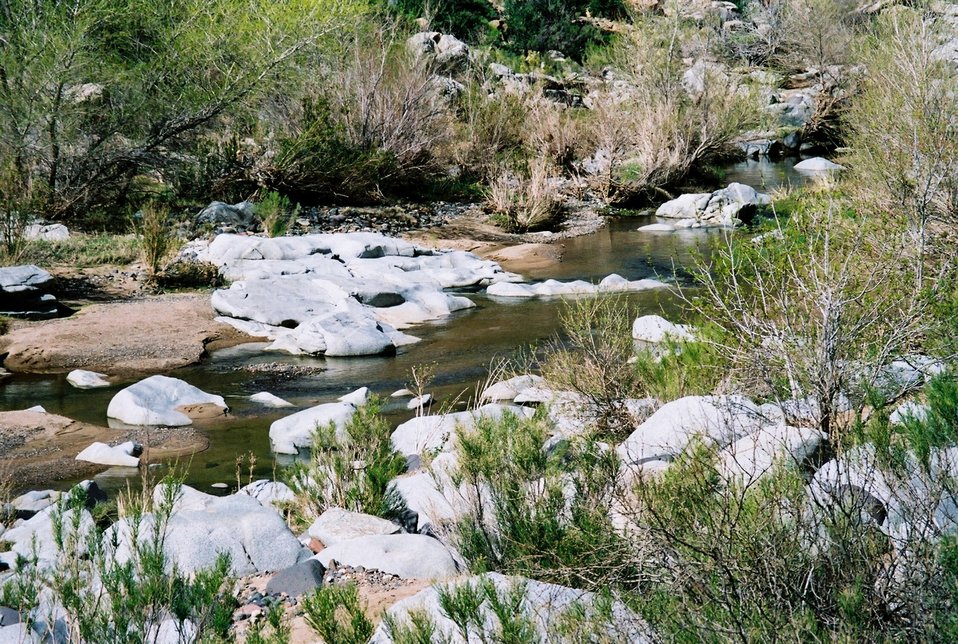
A stream of water runs over rocks in the Agua Fria National Monument.